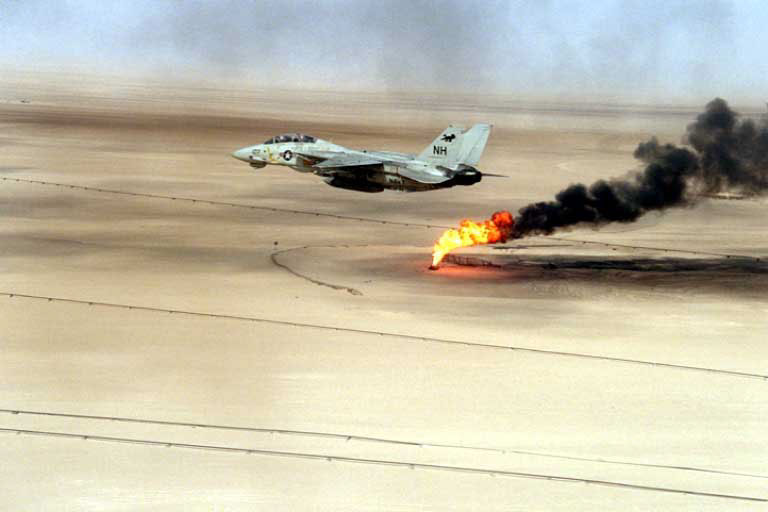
A Navy F-14 Tomcat flying over a burning oil field in Kuwait

1990's -- A Navy F-14 Tomcat flying over a burning oil field in Kuwait.